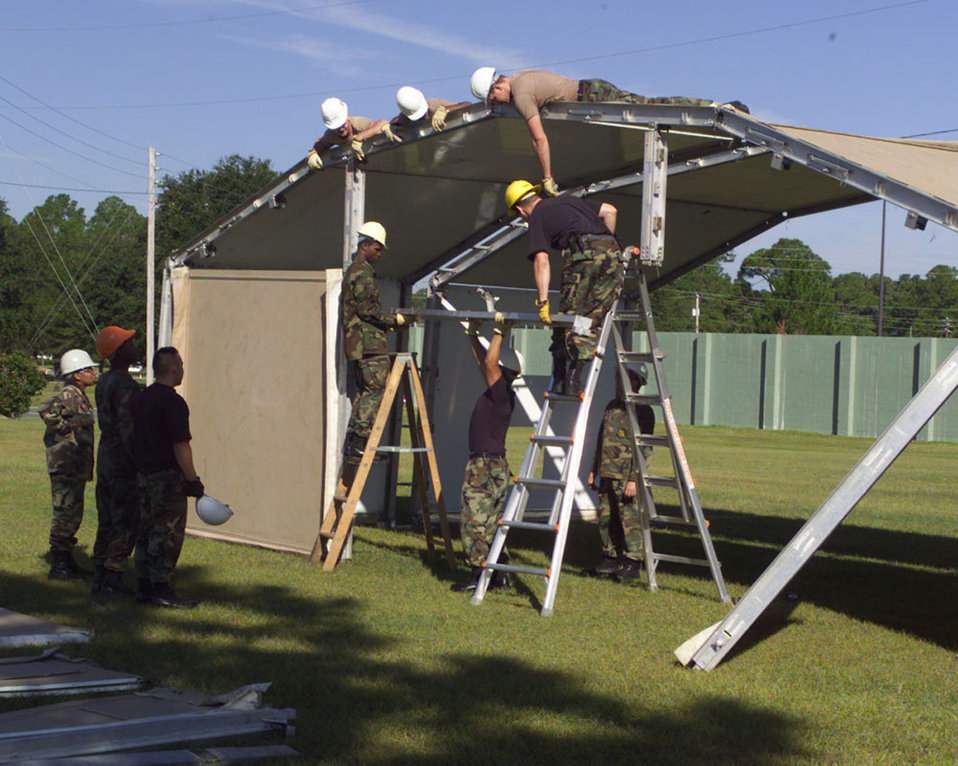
Building a shelter

MOODY AIR FORCE BASE, Ga. -- Airmen attending a four-day training exercise at Moody Air Force Base, Ga., practice building a shelter. Students attending the training learn to assemble structures, an essential skill during a deployment.